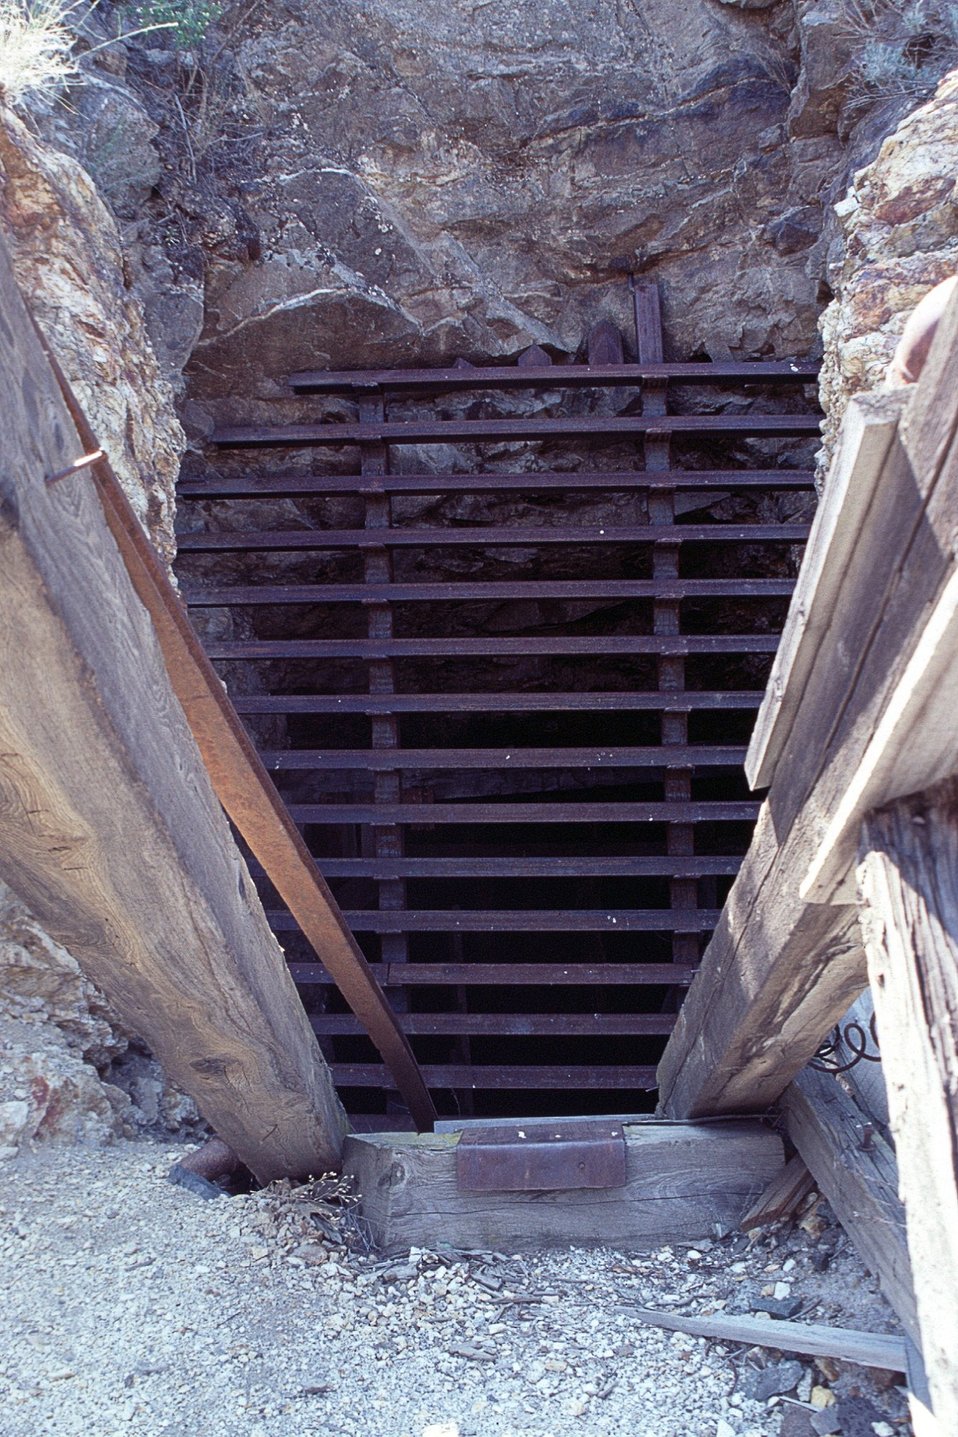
AML, Bat grate on incline shaft at Kaaba-Texas Mine, Spokane District, Washington.